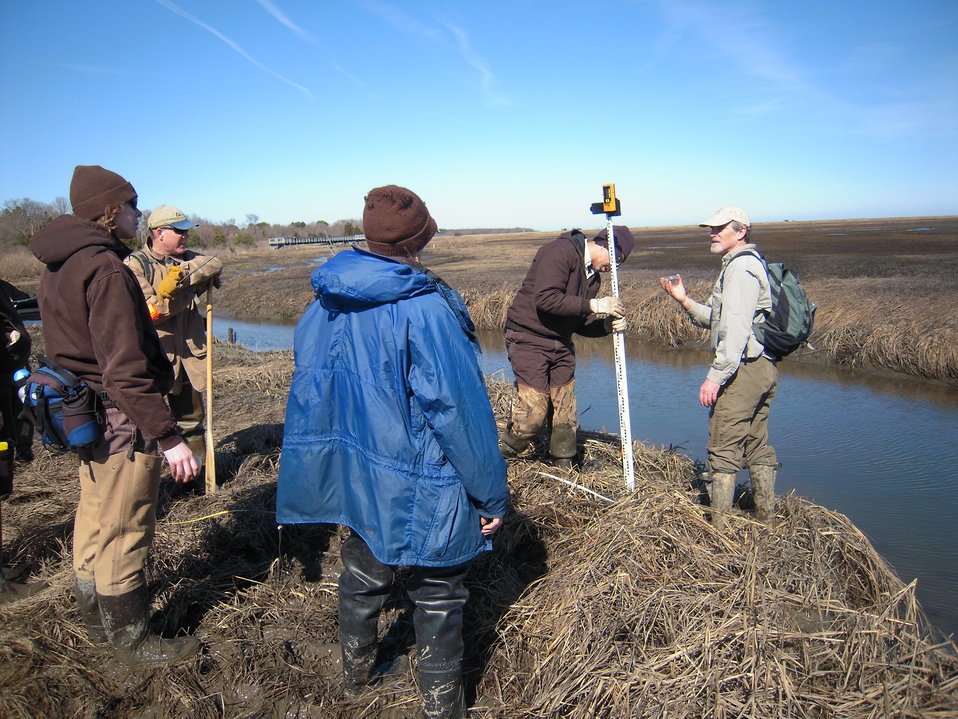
Measuring Sea Levels

Prof. Burdick explains his methodology.